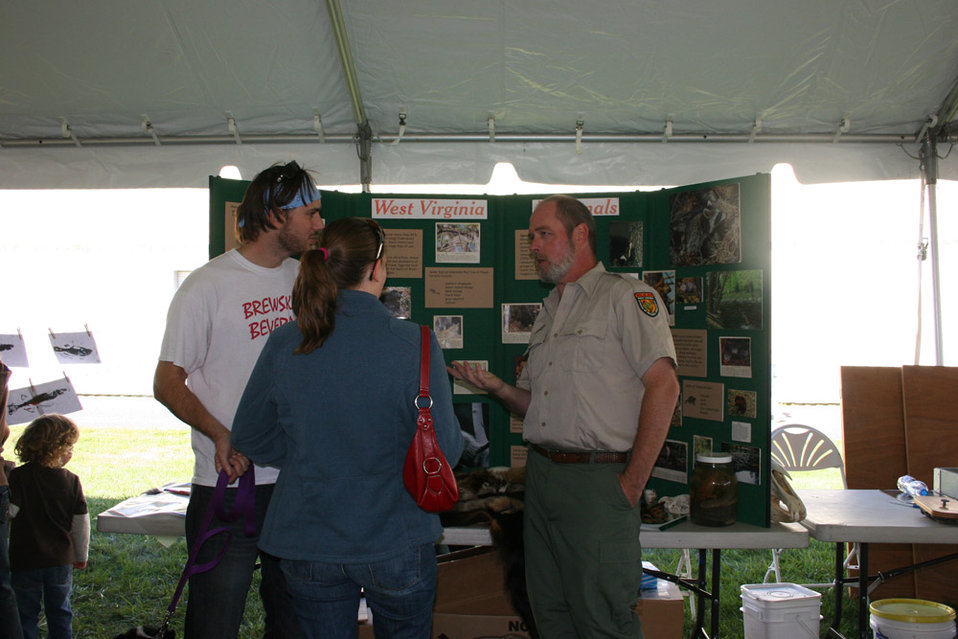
Freshwater Folk Festival

The 5th Annual Freshwater Folk Festival at White Sulphur Springs National Fish Hatchery in West Virginia.Credit: USFWS